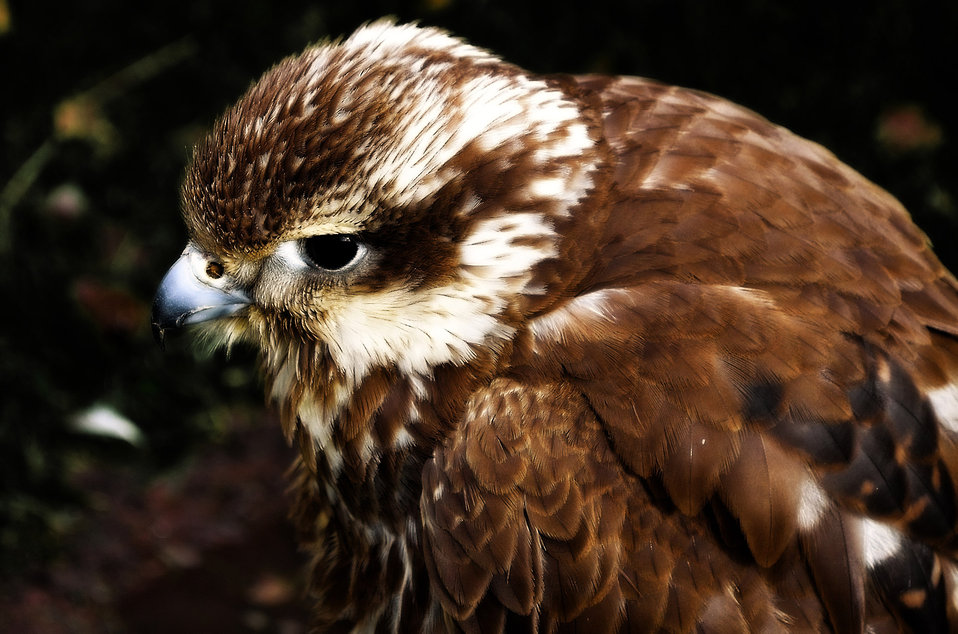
Jack harris hawk.